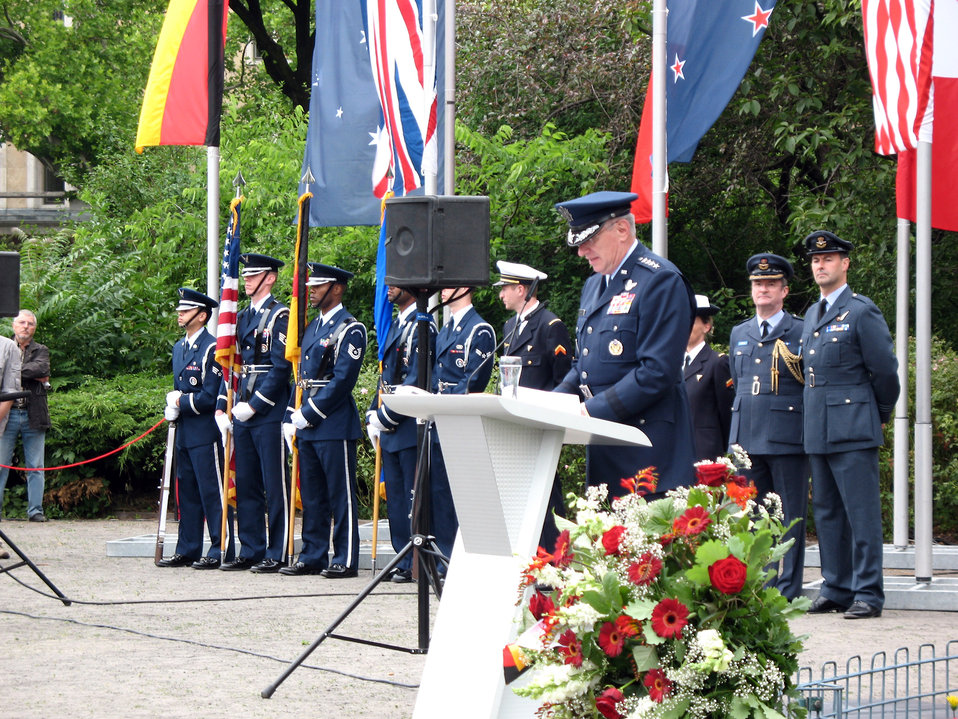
Remembering the Berlin Airlift

Gen. Roger A. Brady speaks to a Berlin Airlift Memorial crowd at a 60th anniversary ceremony June 27 in Berlin. Sixty years ago, American Airmen teamed with French and British air forces to sustain the city for 11 months, flying food, coal, supplies and medicine to millions of Berliners cut off by the Soviet blockade of the city. General Brady is the U.S. Air Forces in Europe commander.